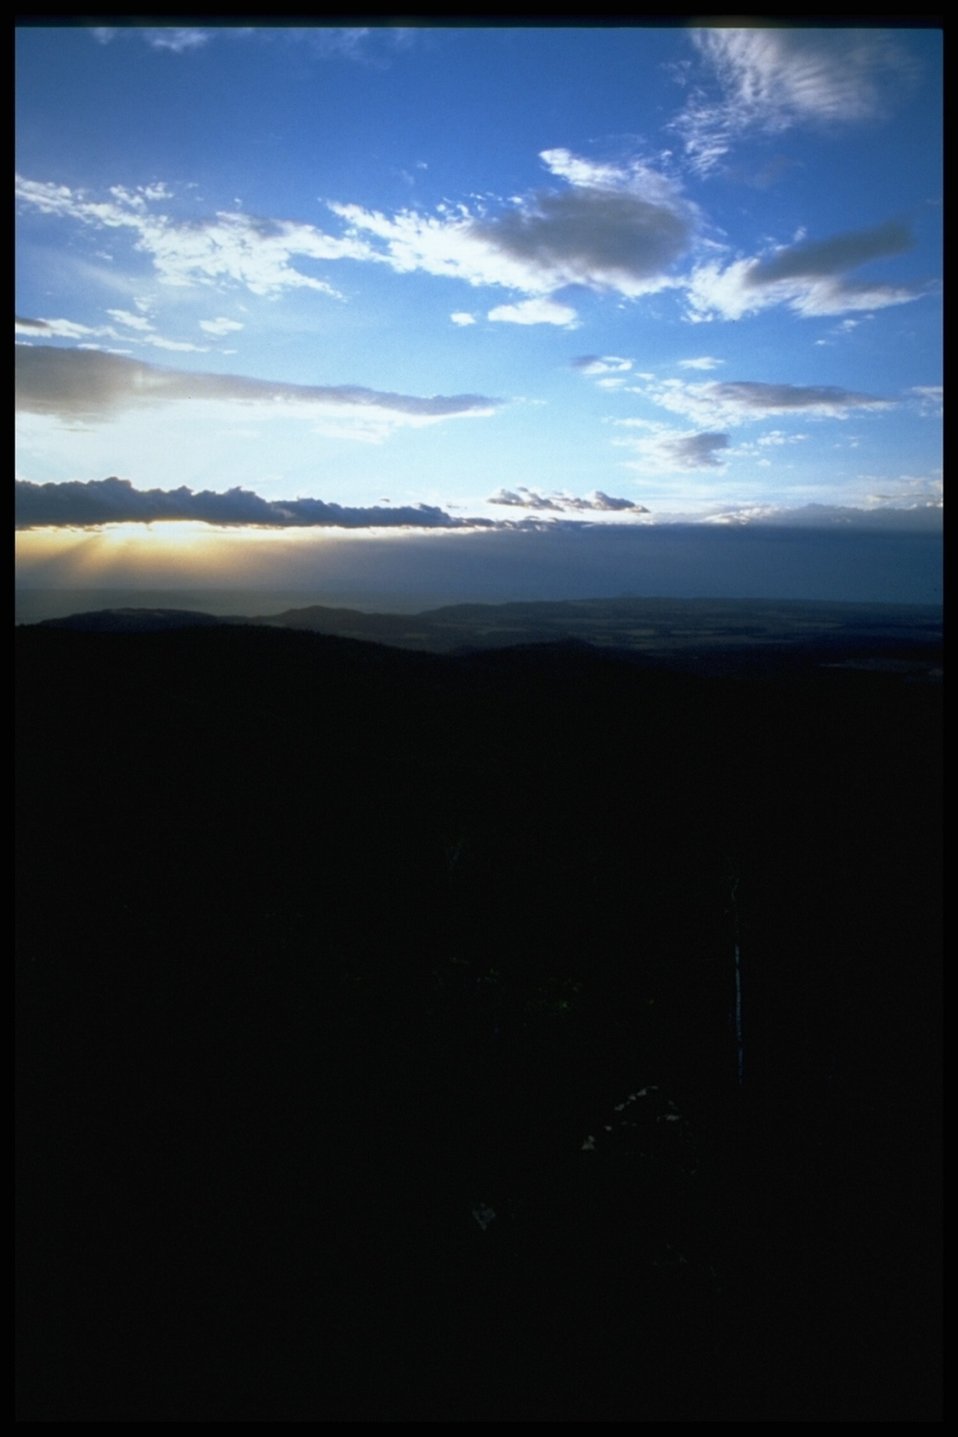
The sun rises on the Grand-Canyon Parashant National Monument.